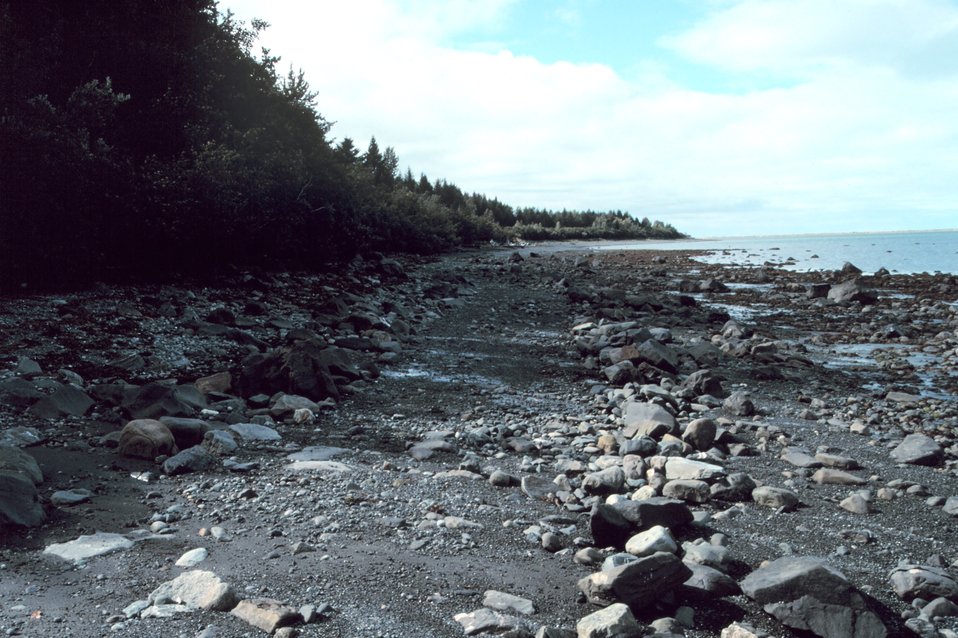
A beach of glacial debris in the Icy Bay area. The hollowed out part of the beach is not the result of geologic processes but came from a bull-dozer scraping a road along the beach.